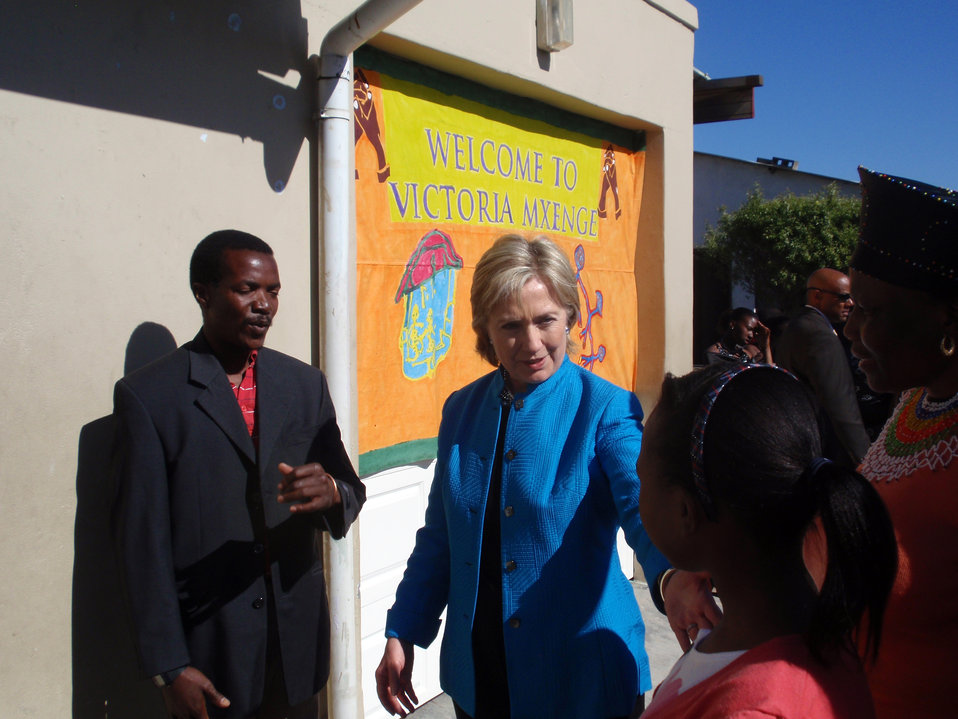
Secretary Clinton Visits Victoria Mxenge Housing Development

U.S. Secretary of State Hillary Rodham Clinton visits the Victoria Mxenge Housing Development in Cape Town, South-Africa, August 8, 2009.